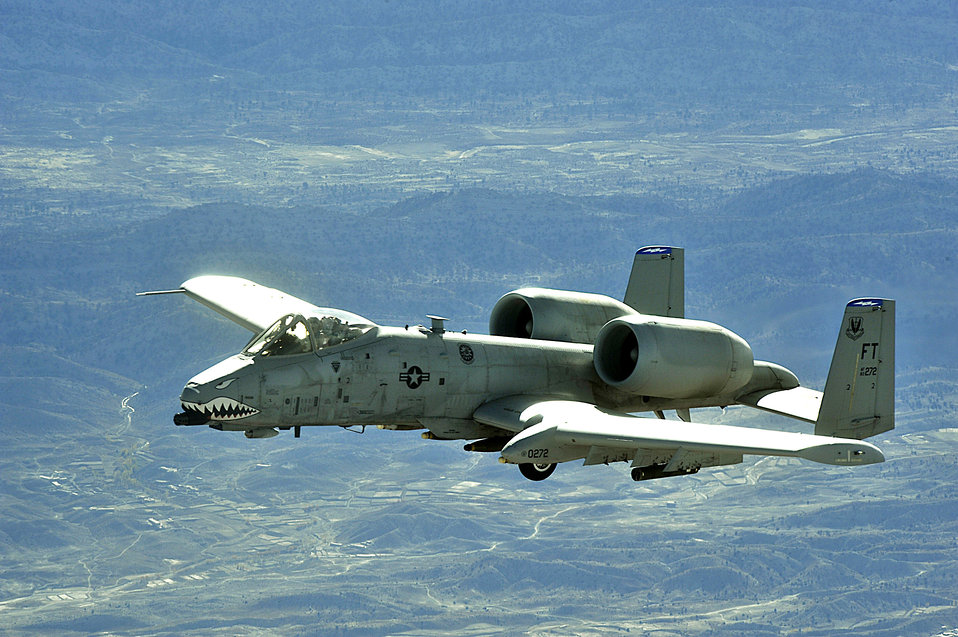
April 18 airpower summary: A-10s protect coalition forces

An A-10 Thunderbolt II flies a combat mission over Afghanistan. A-10s provide close-air support and employ a wide variety of conventional munitions, including general purpose bombs, cluster bombs units and laser guided bombs.